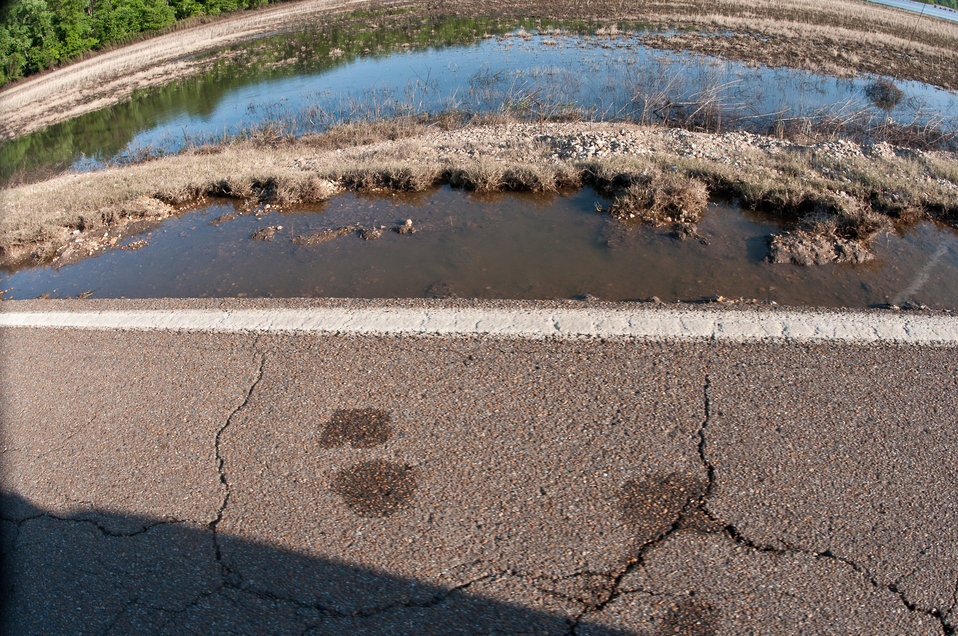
Receding Mississippi River floodwaters reveal the damaging effect on Lauderdale County, TN roadways (right) near Open Lake on Saturday, May 21, 2011. Although seemingly minor, the scouring effect of water flow over the asphalt washed away long stretches of the road base in this county. The damaged areas cannot be simply filled with dirt. The paved and unpaved roadways in flooded areas will require specialized road repairs that are paid for by local counties or municipalities.